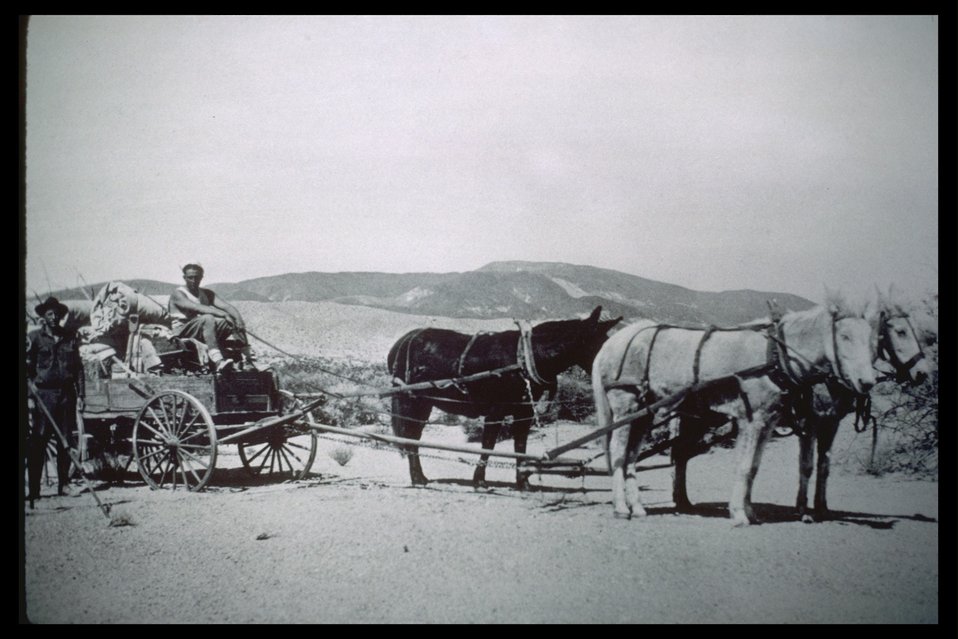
Black & White photo of men with their freight wagons and mules in Eastern Oregon.